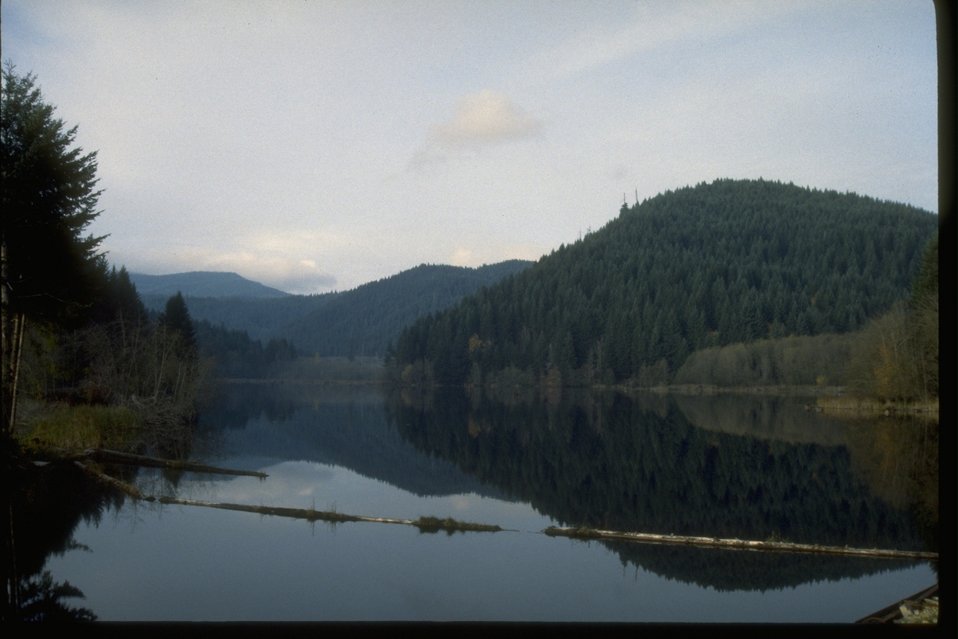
Hult Mill Pond.